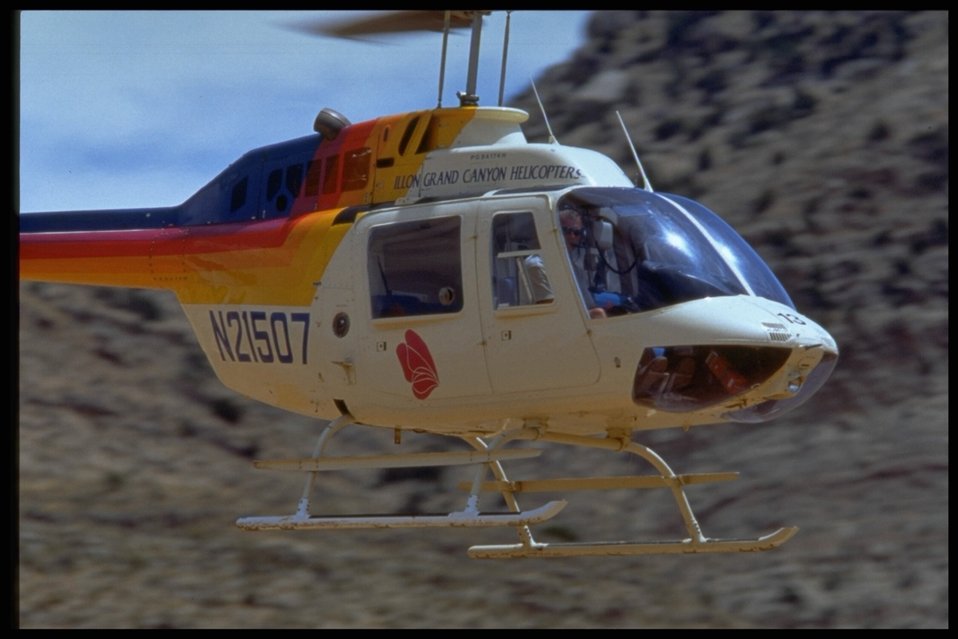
A close-up view of a helicopter landing in the Grand Canyon-Parashant National Monument.